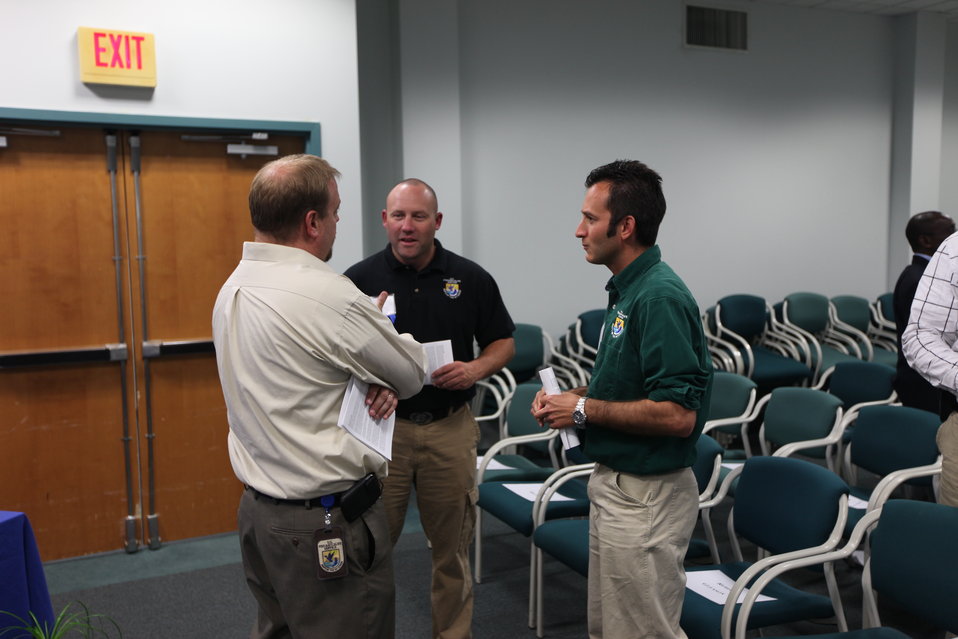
Northeast Region Employee Appreciation Awards